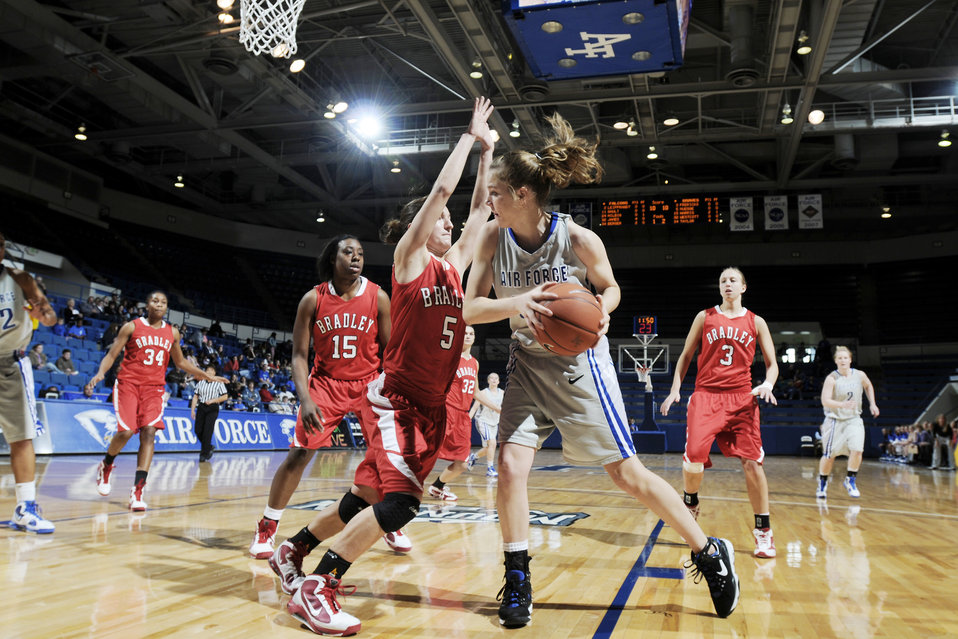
Women's basketball: Bradley University runs past Air Force

Air Force Academy freshman forward Katie Hilbig pushes toward the basket as Bradley University's Hanna Muegge defends during the Falcons game against the Braves at the Academy's Clune Arena Dec. 19, 2009. Air Force lost the game 62-45.